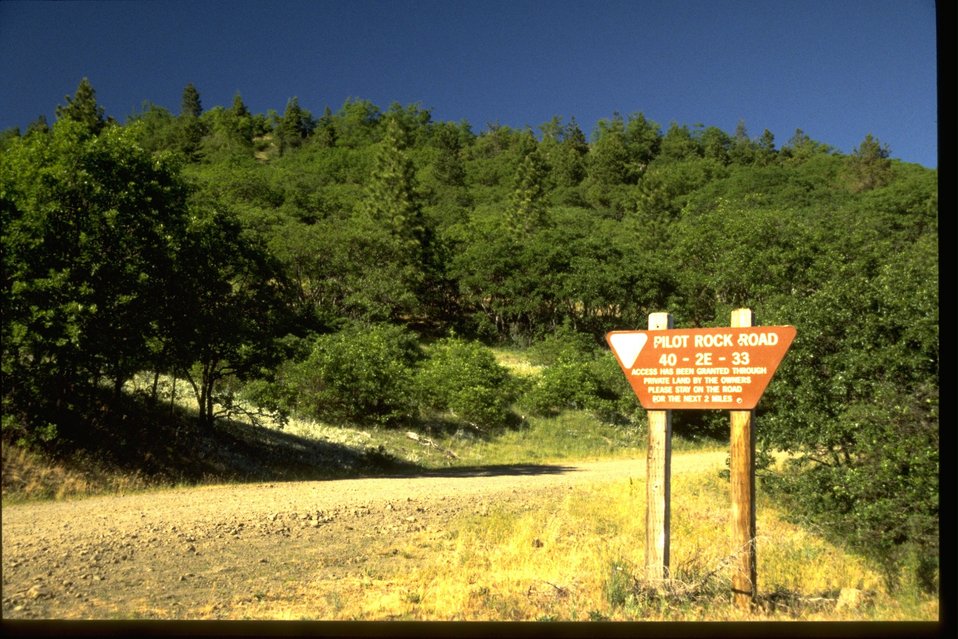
Sign on Pilot Rock Road.